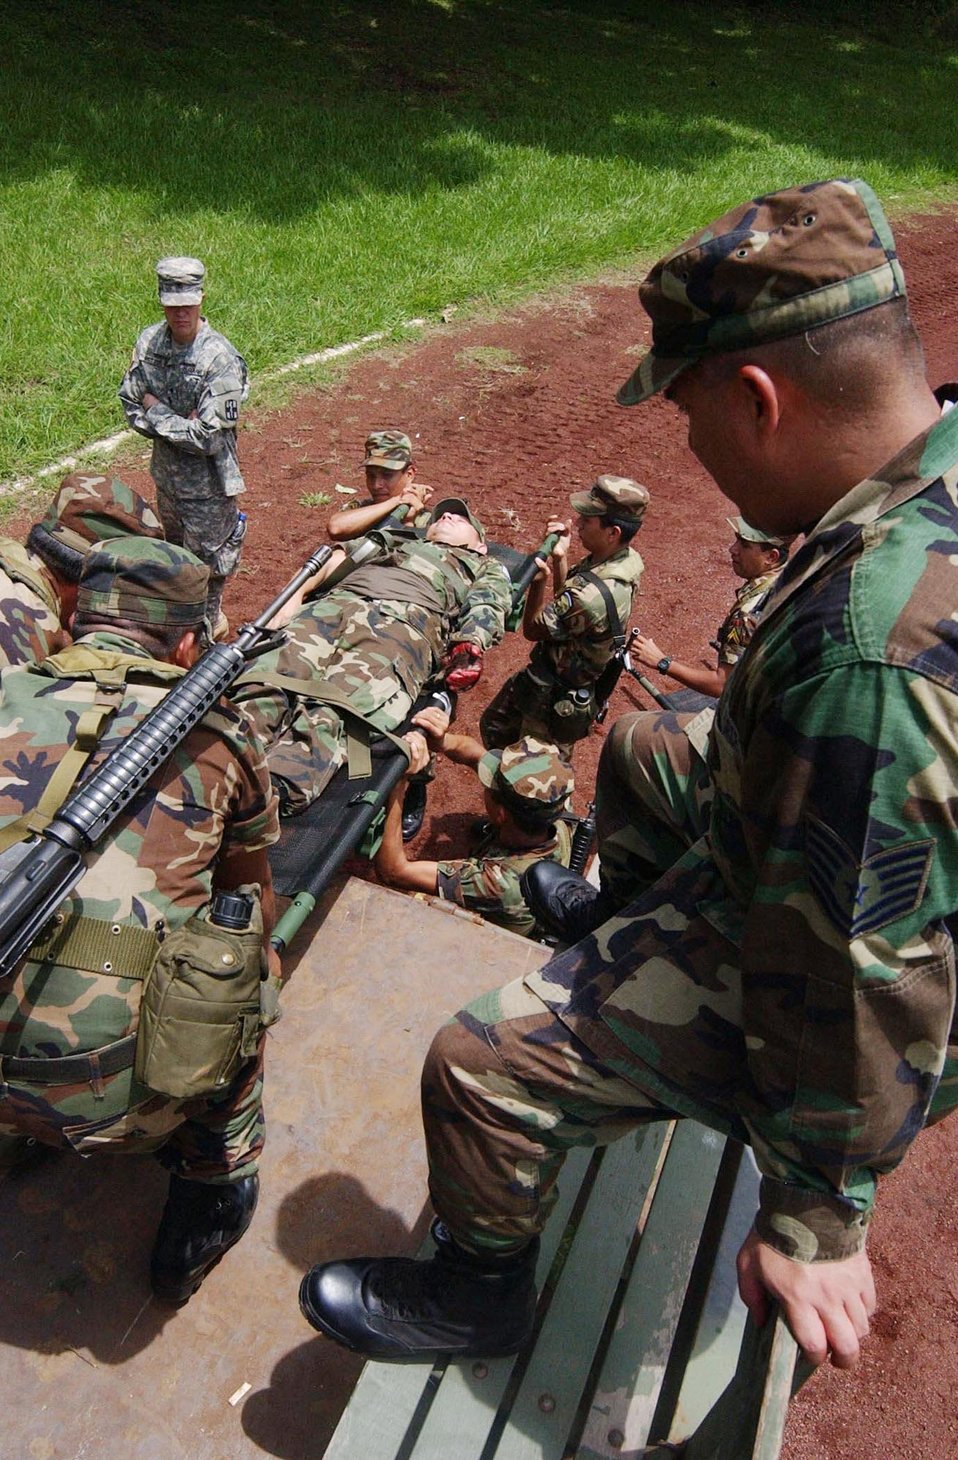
Task force provides OIF training to El Salvadorian military

Medical instructor Tech. Sgt. James Luna observes El Salvadorian soldiers as they offload a wounded soldier from the back of a five-ton truck. During a week-long training mission, medical students were taught combat life saver skills in preparation for their deployment in support of Operation Iraqi Freedom.